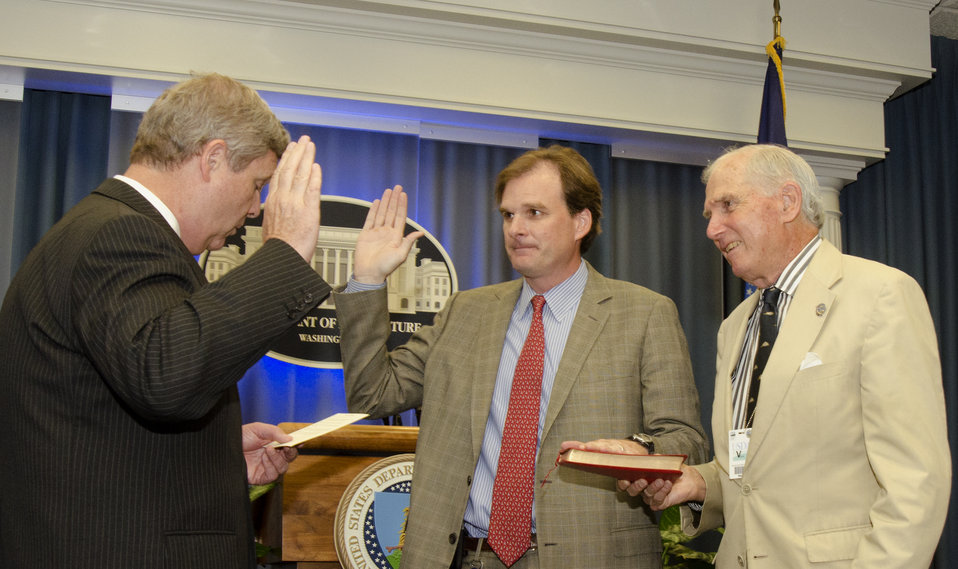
Agriculture Secretary Tom Vilsack swears in Robert Bonnie (center) as the new Under Secretary for Natural Resources and Environment (NRE). Under Secretary Bonnie’s father, Ned, stands by his side at the U.S. Department of Agriculture in Washington, D.C. on Monday, Aug. 12, 2013.